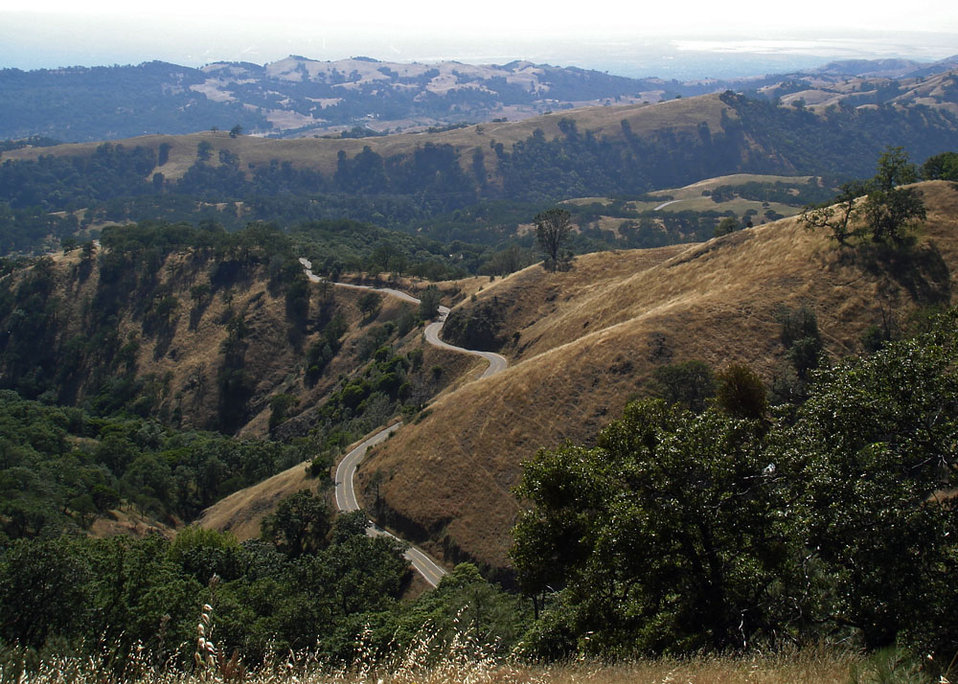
Route 130 winding around through oak woodlands in the mountains of the Diablo Range, Santa Clara County, California.